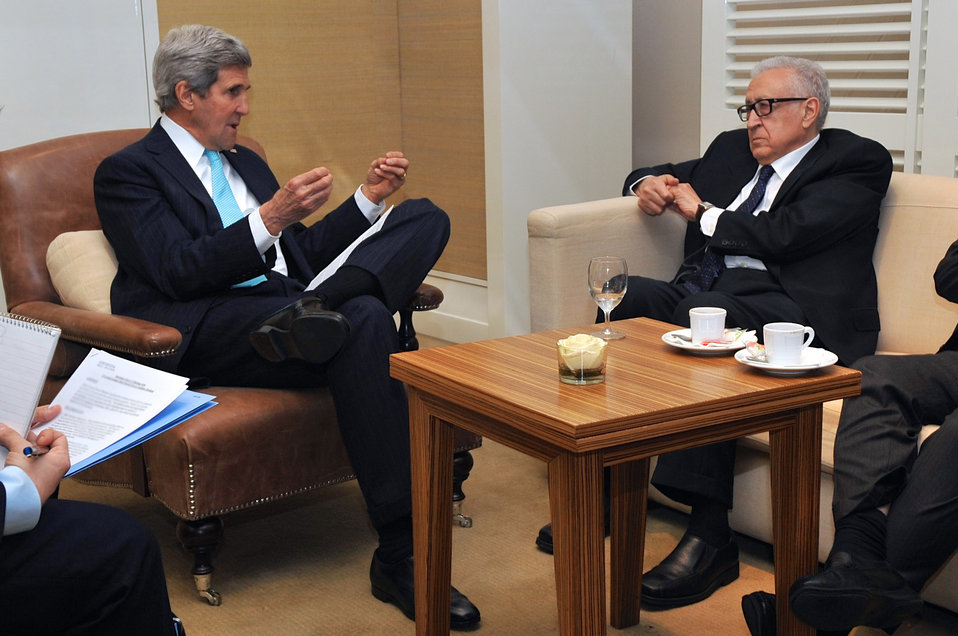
Secretary Kerry Meets With UN Special Representative Brahimi in Geneva

U.S. Secretary of State John Kerry sits with United Nations Special Representative for Syria Lakhdar Brahimi in Geneva, Switzerland, on April 17, 2014, following meetings with Russian, Ukrainian, and European Union officials about Ukraine.